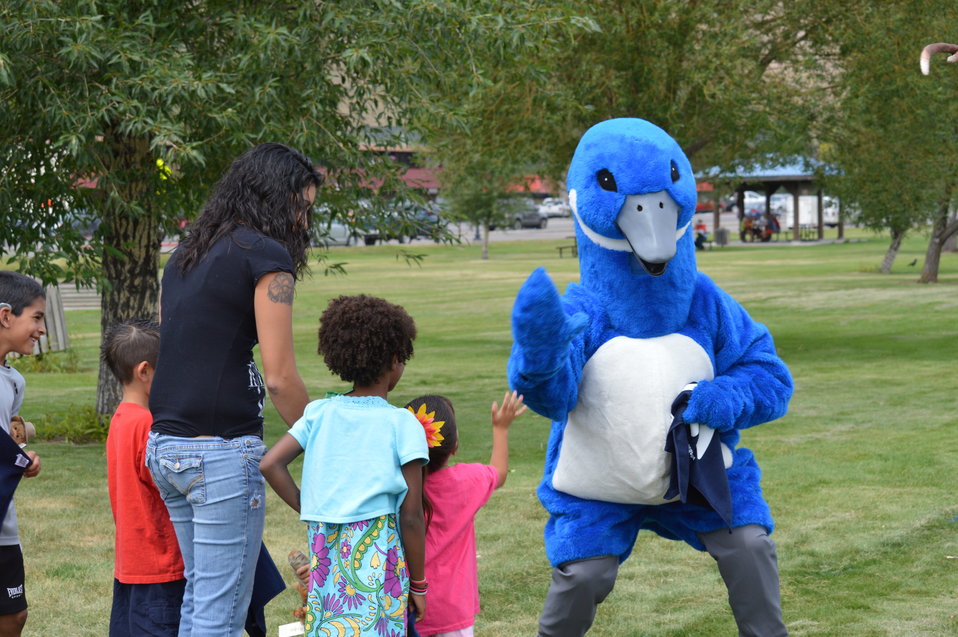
Get Your Goose On! - National Elk Refuge Style

On August 10, 2012 the U.S. Fish and Wildlife Service and Partners celebrated the 100 year anniversary of the establishment of the National Elk Refuge. In these photos, young attendees, along with Puddles the Blue Goose and the National Elk Refuge's mascot, showed us how to Get Your Goose On! with style.